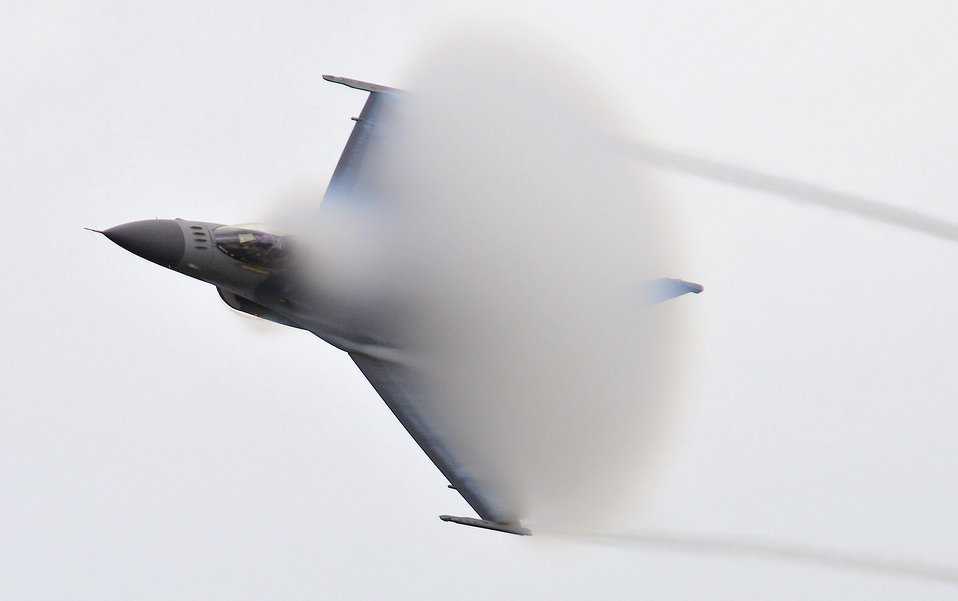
Approaching the sound barrier

An F-16 Fighting Falcon pilot with the Viper East Demonstration Team from Shaw Air Force Base, S.C., creates a